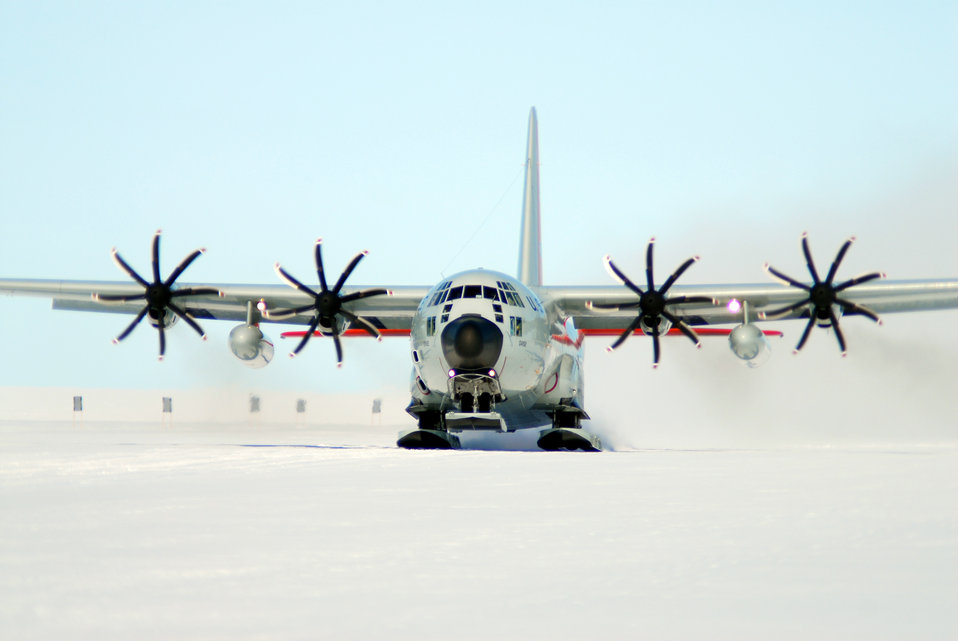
Logistic support to Antarctic science effort wraps up

An LC-130 Hercules takes off as part of Operation Deep Freeze Feb. 2, 2010 in Antarctica.